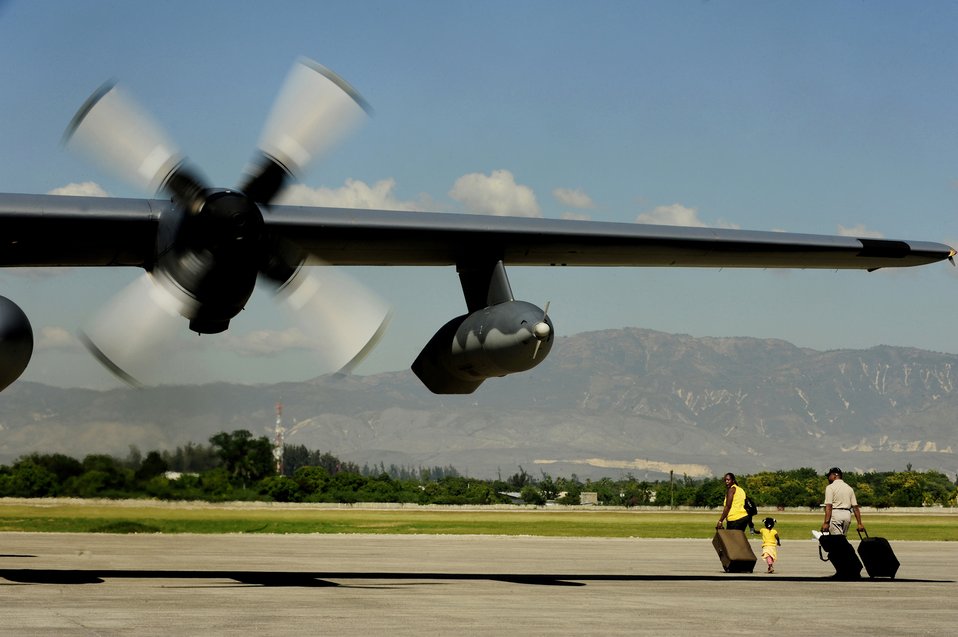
Haiti earthquake relief

U.S. citizens living in Haiti wait to board a C-130 Hercules that will transport them back to the U.S. Jan. 15, 2010, at the Port-Au-Prince airport, Haiti. Department of Defense assets have been dispatched to Haiti to assist with humanitarian assistance and disaster relief after a magnitude 7 earthquake hit the country Jan. 12, 2010.